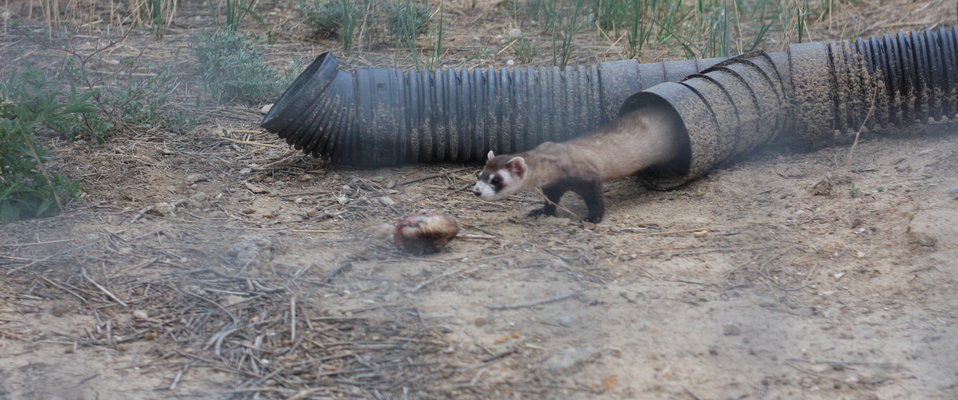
Interns visit the NBFFCC

In the summer of 2012, USFWS Region 6 interns visited the National Black-footed Ferret Conservation Center (NBFFCC) in Colorado to learn how the program reintroduces the endangered Black-footed ferret back into its native habitat.